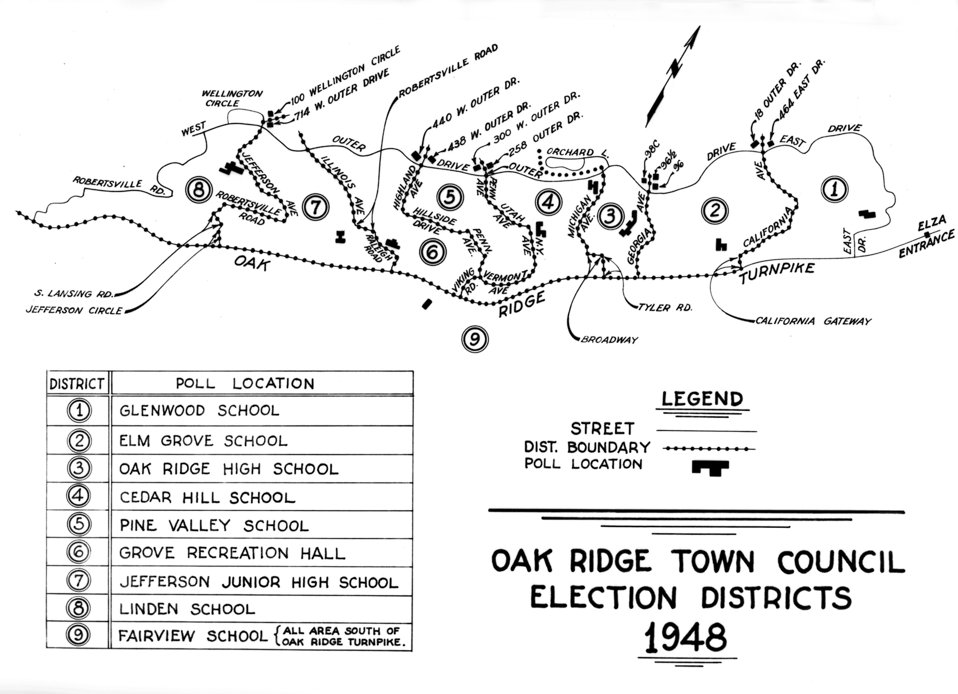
Map of Oak Ridge Election Districts 1948

5228 DOE Map